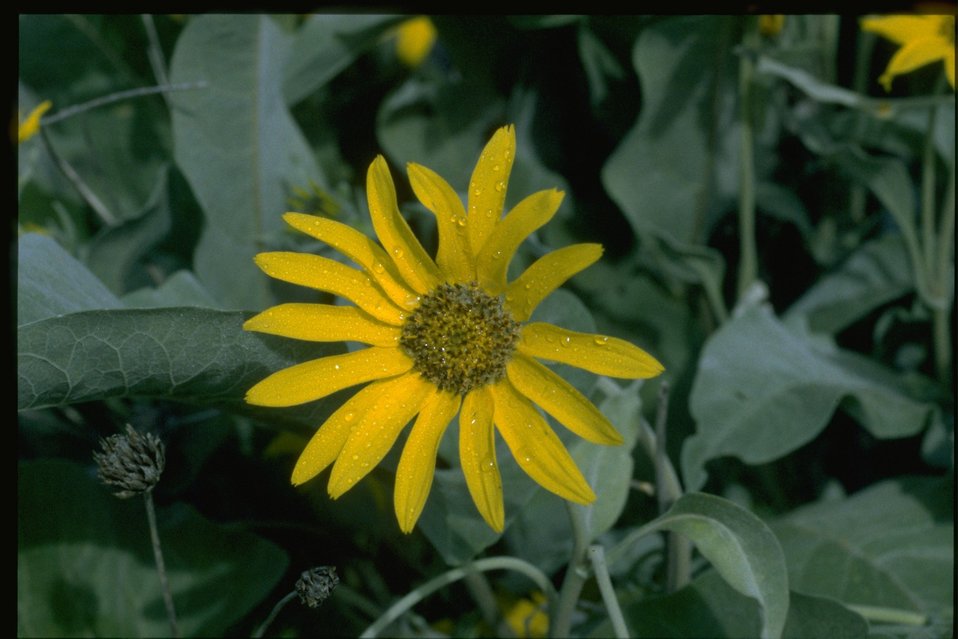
Closeup shot of Arrowleaf Balsam Root (Balsamorhiza sagittata).